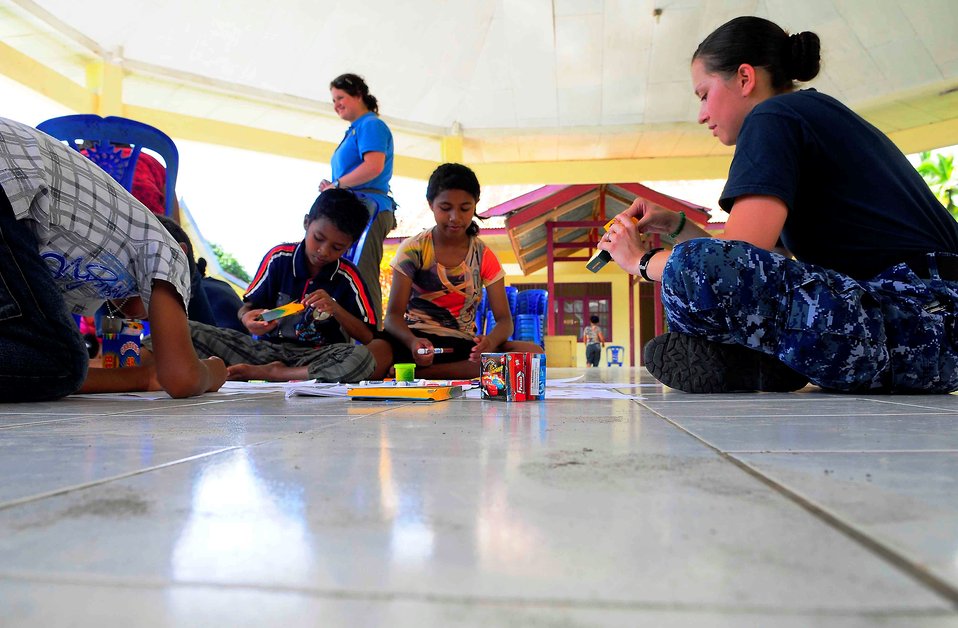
Hospital Corpsman 2nd Class Reese Overturf Colors With Indonesian Children

Hospital Corpsman 2nd Class Reese Overturf, currently embarked aboard the Military Sealift Command hospital ship USNS Mercy (T-AH 19), colors with children during a community service event at the Rumah Sejahtera Bagi Anak Orphanage, in support of Pacific Partnership 2010 in Tobelo, Indonesia, on July 14, 2010. Pacific Partnership 2010 is the fifth in a series of annual U.S. Pacific Fleet endeavors conducted in Indonesia as a disaster relief exercise to strengthen regional partnerships.